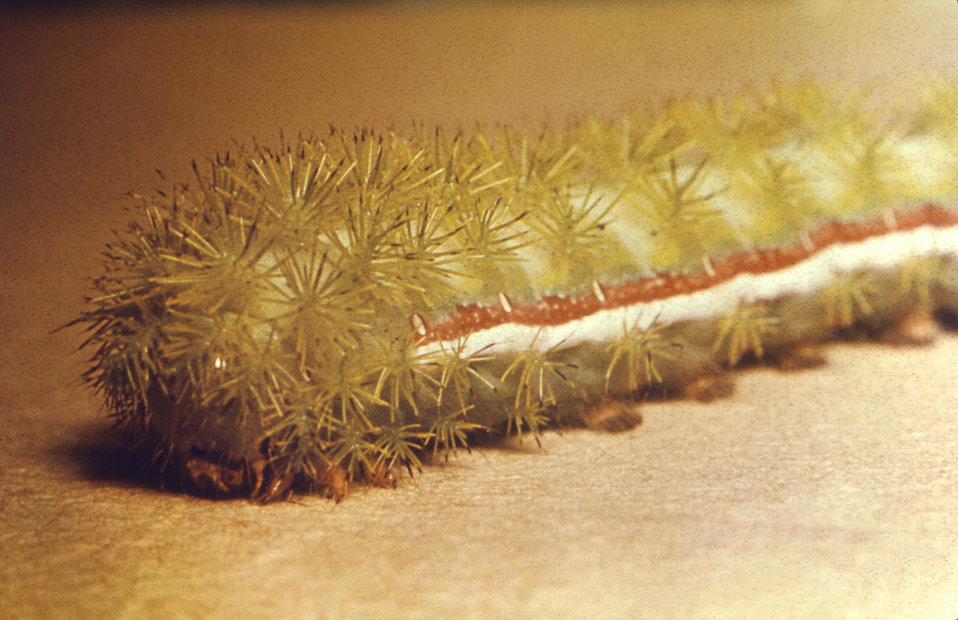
This photograph depicts an anterior oblique view of an Io moth, Automeris io, larva.